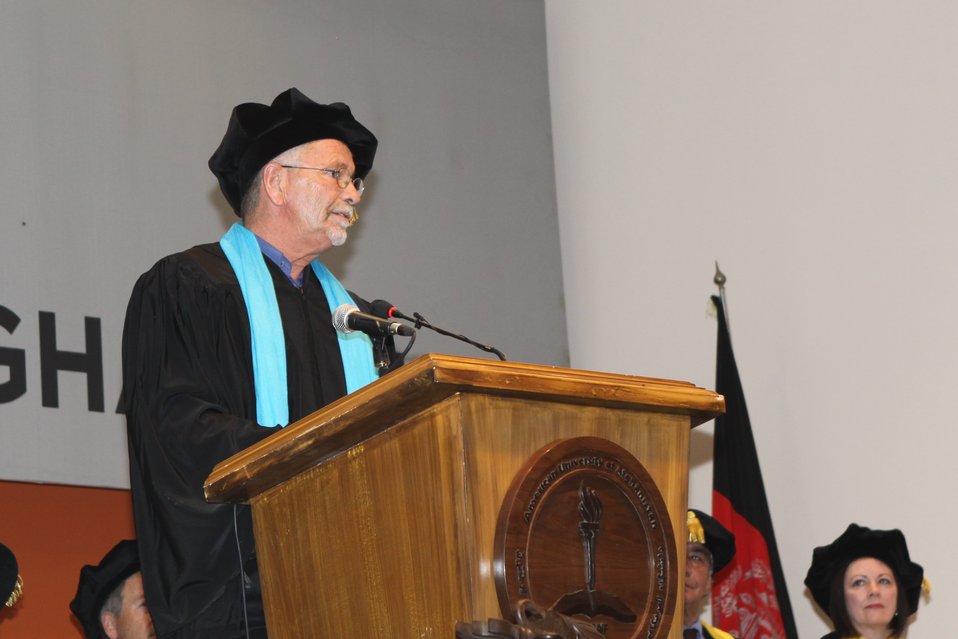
100526 AUAF Graduation 157